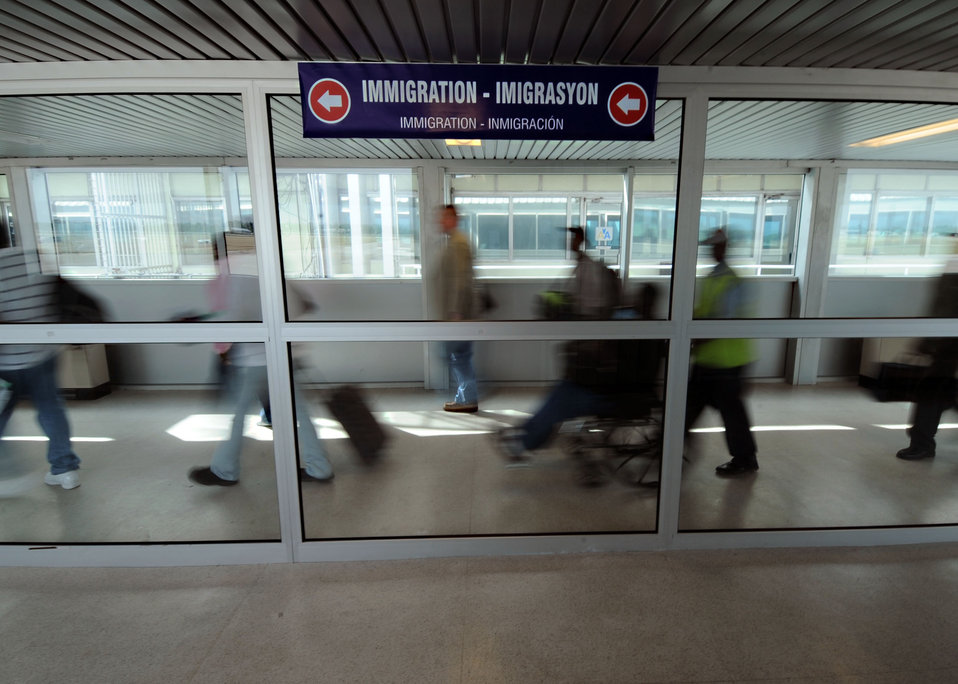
Haiti airport transitions, commercial flights begin

Commercial airlines are resuming flights into the Toussaint L'Ouverture International Airport Feb. 19, 2010, Port-au-Prince, Haiti. This is a significant step forward for the Haitian government after a massive earthquake damaged many parts of the Caribbean nation.